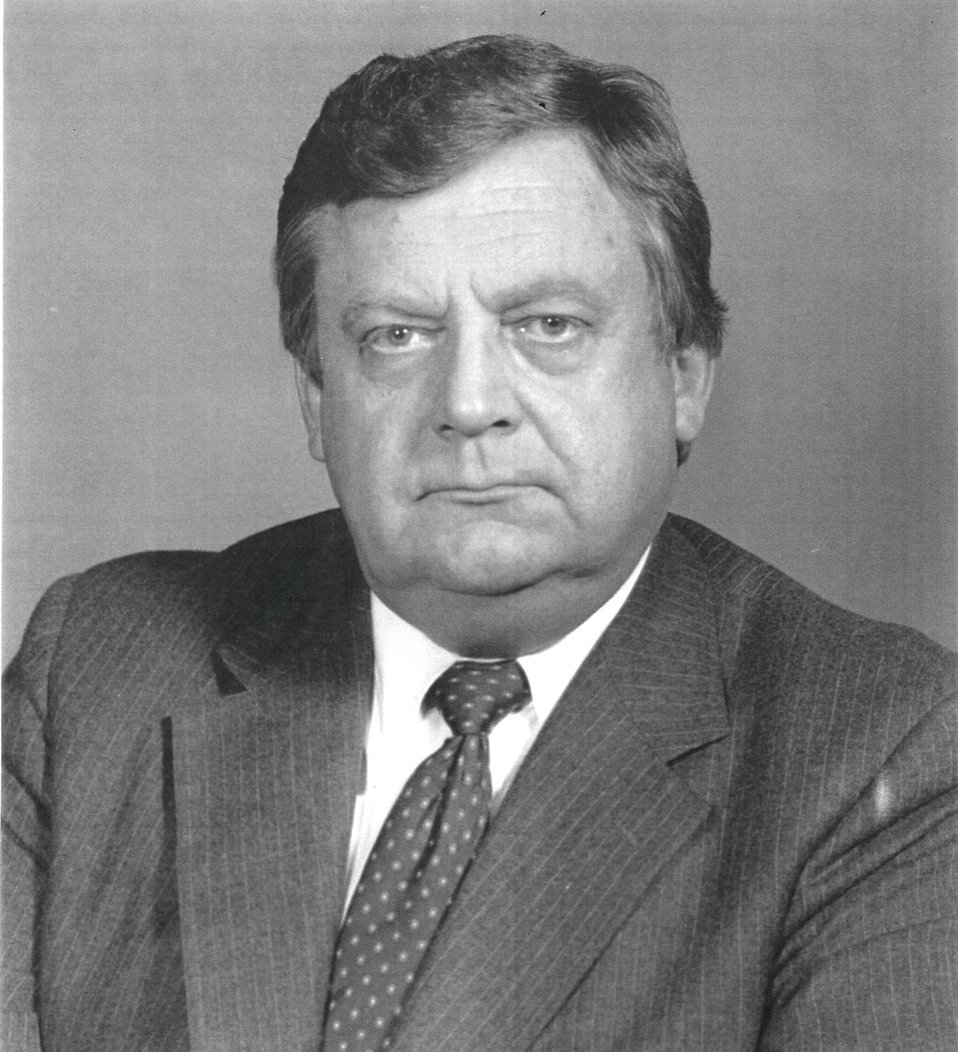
Lawrence S. Eagleburger, U.S. Secretary of State

Lawrence S. Eagleburger, U.S. Acting Secretary of State, August 23, 1992 to December 8, 1992; Secretary of State, December 8, 1992 to January 19, 1993